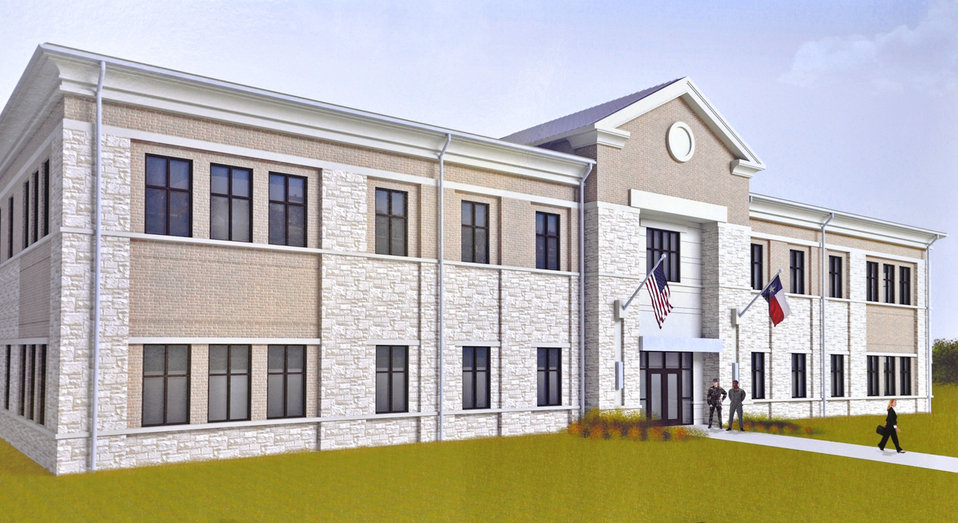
502nd ABW breaks ground on new headquarters

An artist's conception of the new 502nd Air Base Wing headquarters building, which will cost approximately $7.4 million and have a 5.5-acre footprint.